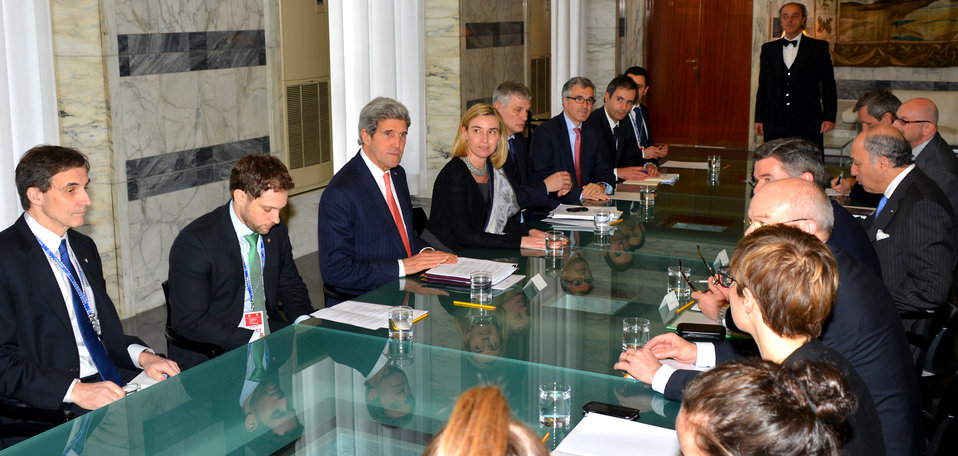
Secretary Kerry Meets With Italian Foreign Minister Mogherini and French Foreign Minister Fabius

U.S. Secretary of State John Kerry meets with Italian Foreign Minister Federica Mogherini, French Foreign Minister Laurent Fabius, and other European Union foreign ministers to discuss Ukraine in Rome, Italy, on March 6, 2014.